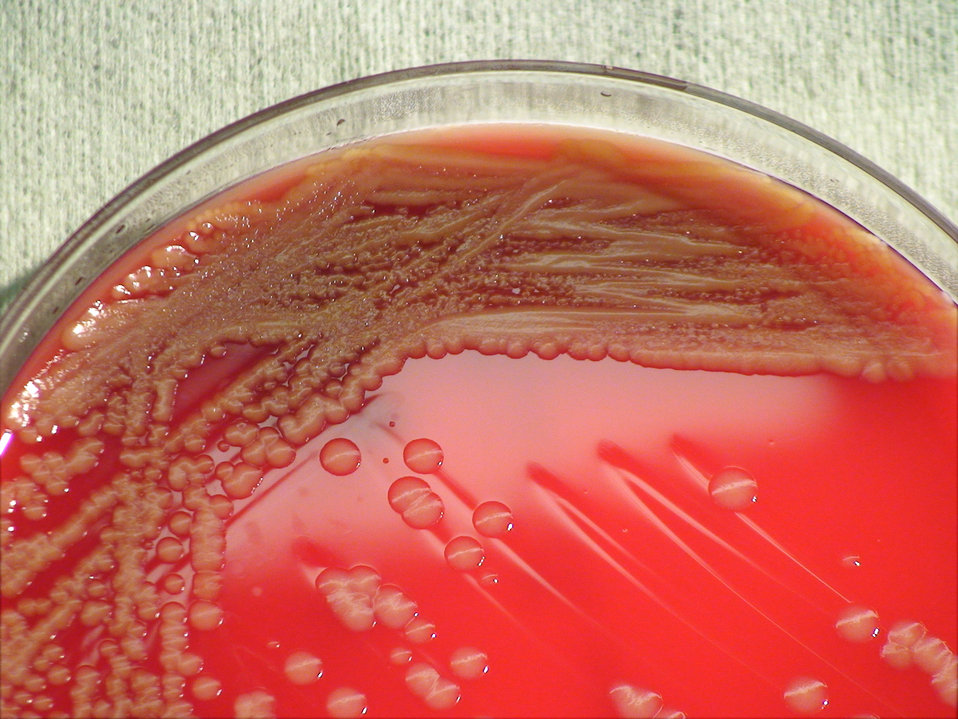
This photograph depicts the colonial morphology displayed by Gram-positive Bacillus megaterium bacteria, which was grown on a medium of sheep's blood agar (SBA), for a 24 hour time period, at a temperature of 37�C. The overall colonial morphology displayed by B. megaterium is very similar to that displayed by B. anthracis. See PHIL 12383, and 12384, for other views of this culture plate, and these bacterial colonies.